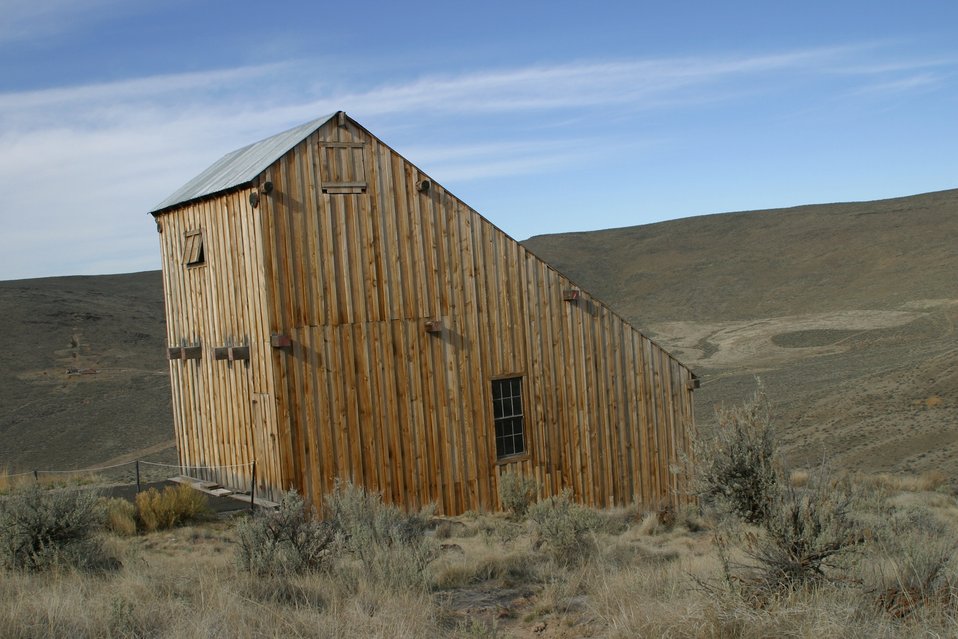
A replica of the Rabbit Mine 1926 stamp mill near Greenhorn in the Blue Mountains of eastern Oregon. It is used to interpret the importance of mining in western history, and the relationship of gold mining to the westward migration story.